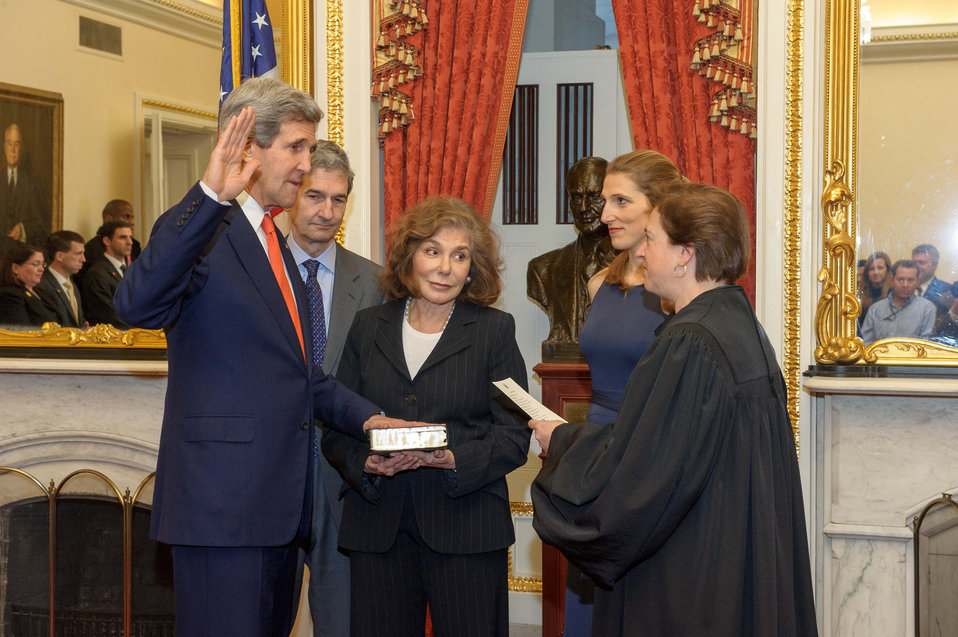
Supreme Court Justice Kagan Swears in Secretary Kerry

Supreme Court Justice Elena Kagan swears in Secretary of State John Kerry on February 1, 2013 in the Foreign Relations Committee Room in the Capitol. They were joined by his wife Teresa, daughter Vanessa, brother Cameron, and his Senate staff.